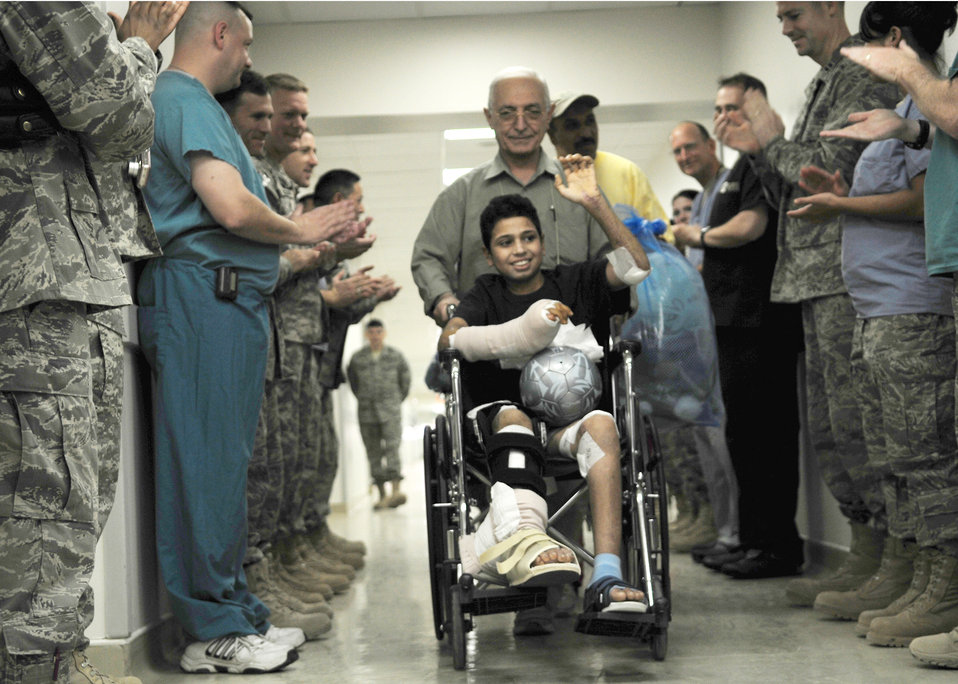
Air Force medics release 14-year-old mortar attack survivor after weeks of treatment

Medical personnel applaud as Ahmad, a 14-year-old Iraqi victim of a mortar explosion, leaves the Air Force Theater Hospital Sept. 17, 2009, at Joint Base Balad, Iraq. Ahmad spent more than a month at the AFTH recovering from his injuries.